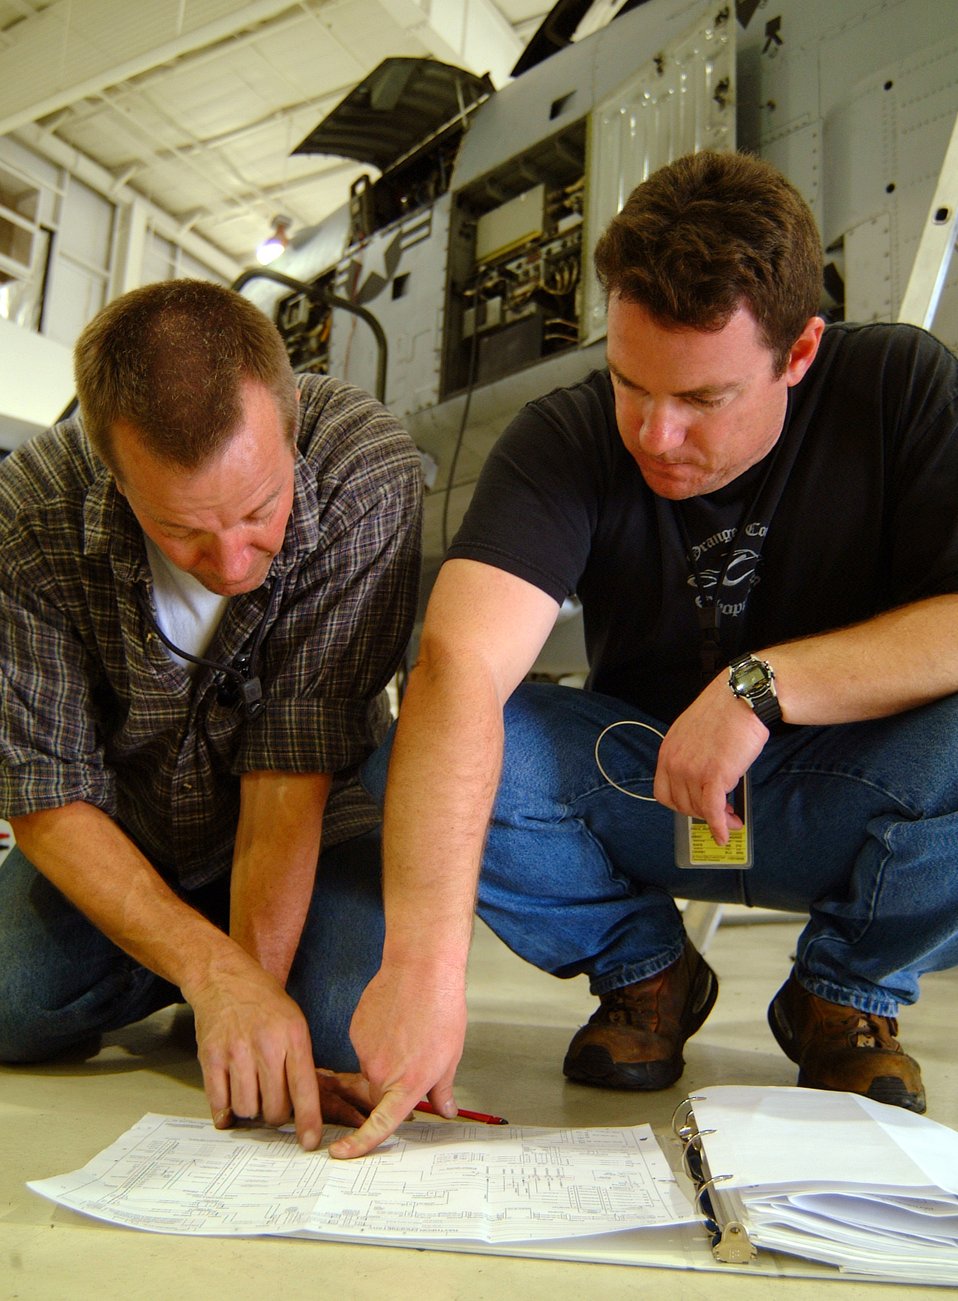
Whiteman A-10s upgrading with

Air Reserve Technician Tech. Sgts. Paul Hanson (left) and Mike Price consult a wiring diagram while testing a newly-installed